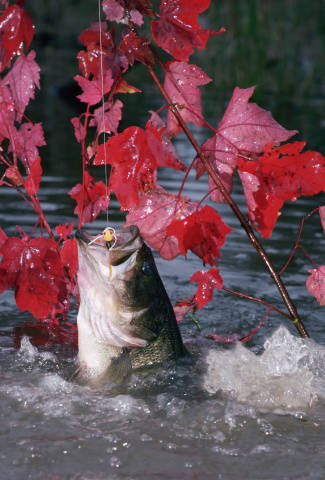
Fall fishing

Photo credit: USFWS/F. Eugene Hester

Climate change impacts such as warming water, decreased flows, and depleted oxygen levels are predicted to stress fish populations and impact recreational fishing